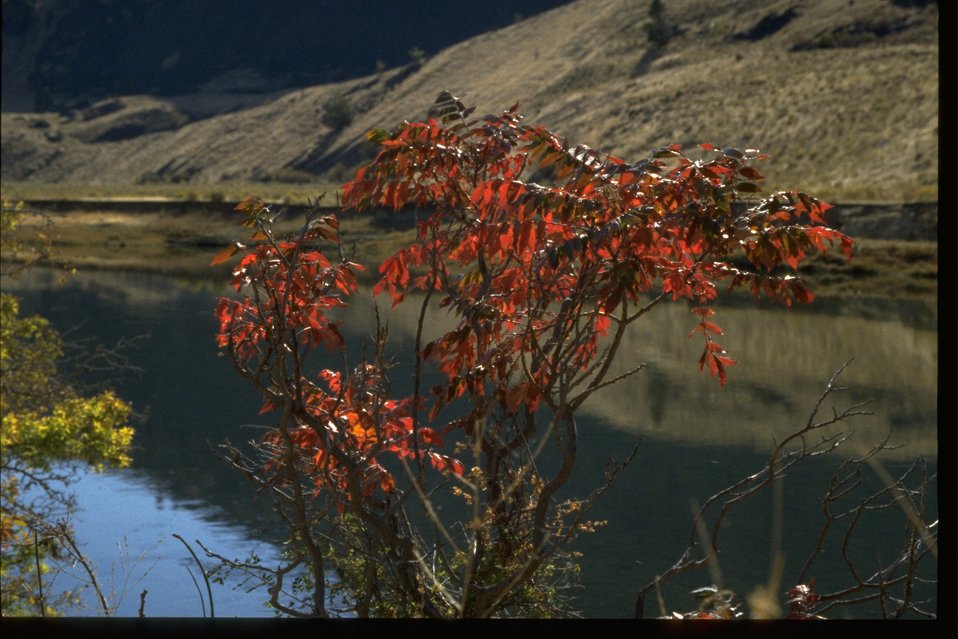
Sumac and riparian vegetation along the John Day River.